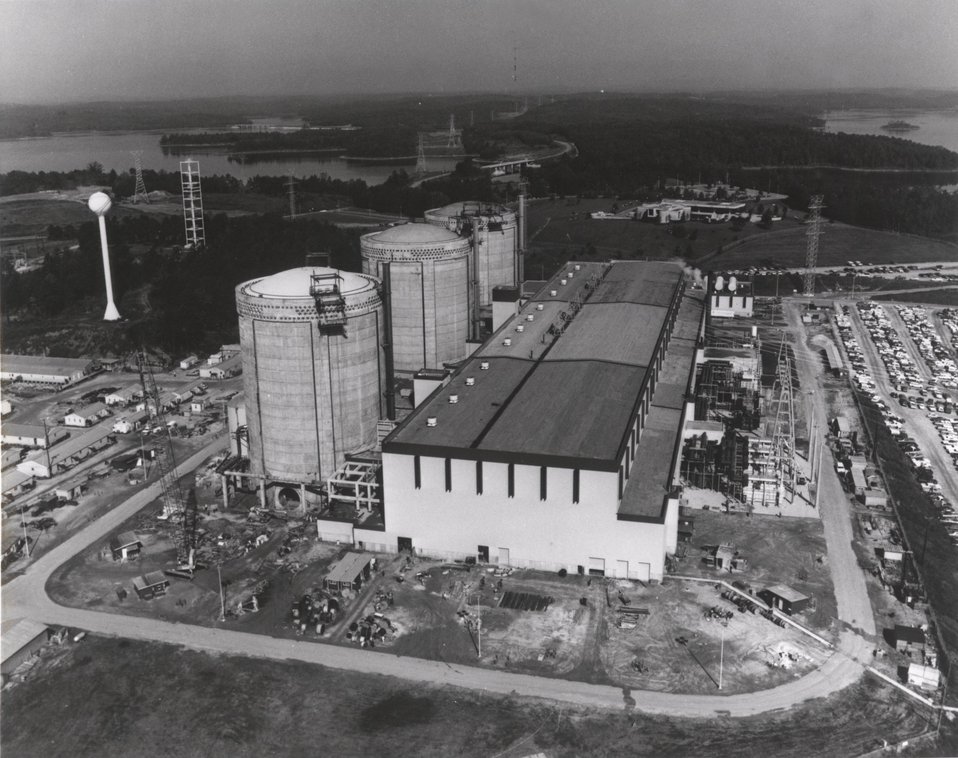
Aerial view of the Duke Power Company's Oconee Nuclear Station at Seneca, South Carolina. Circa 1974.